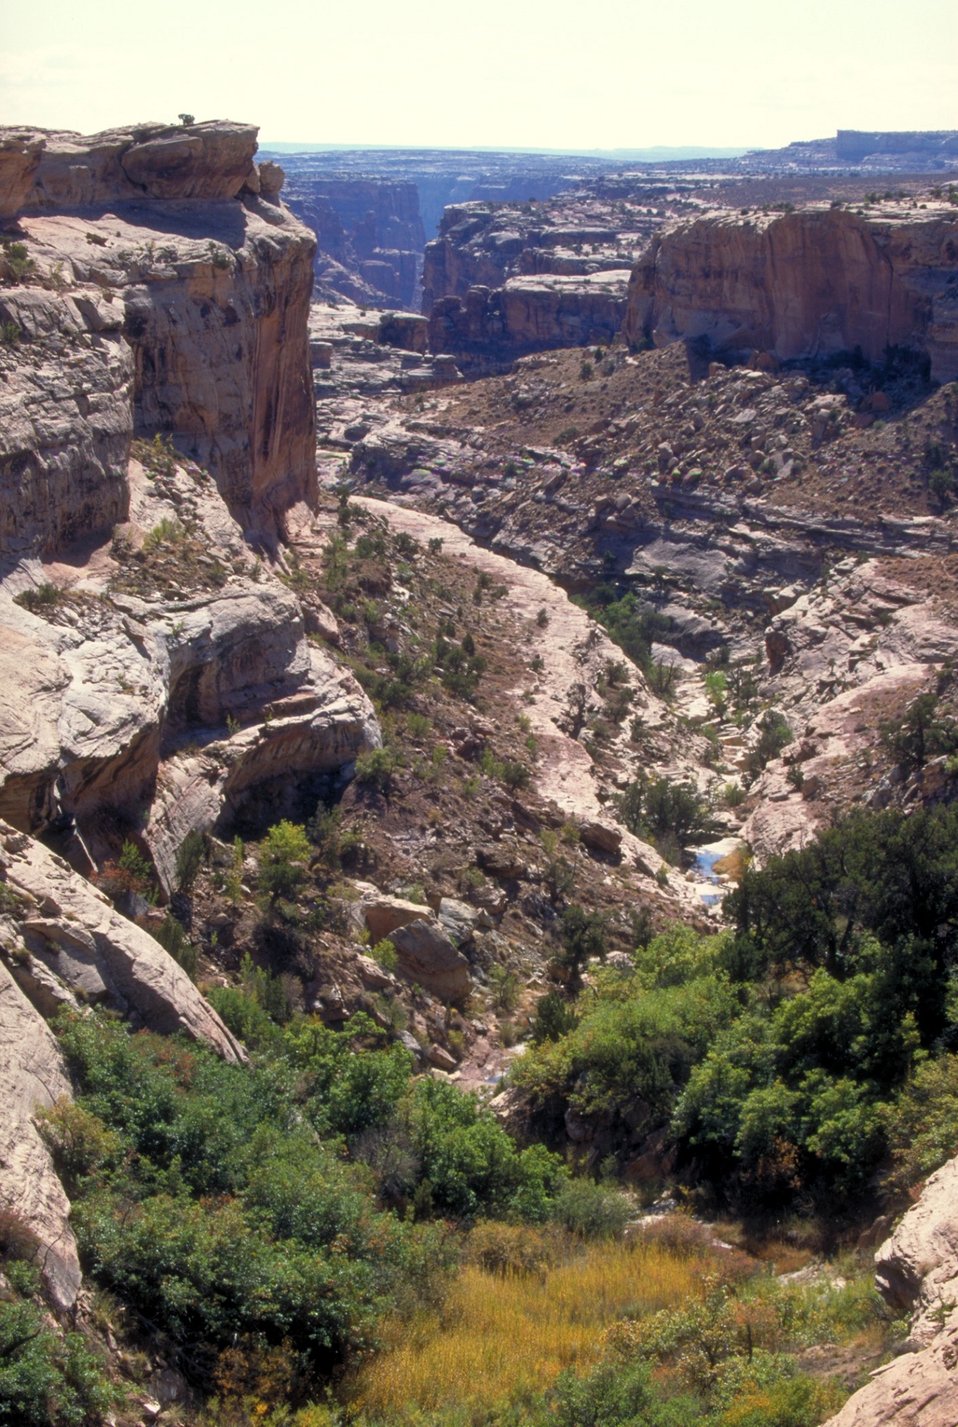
Head of Spring Canyon along the Green River near Moab, Utah.